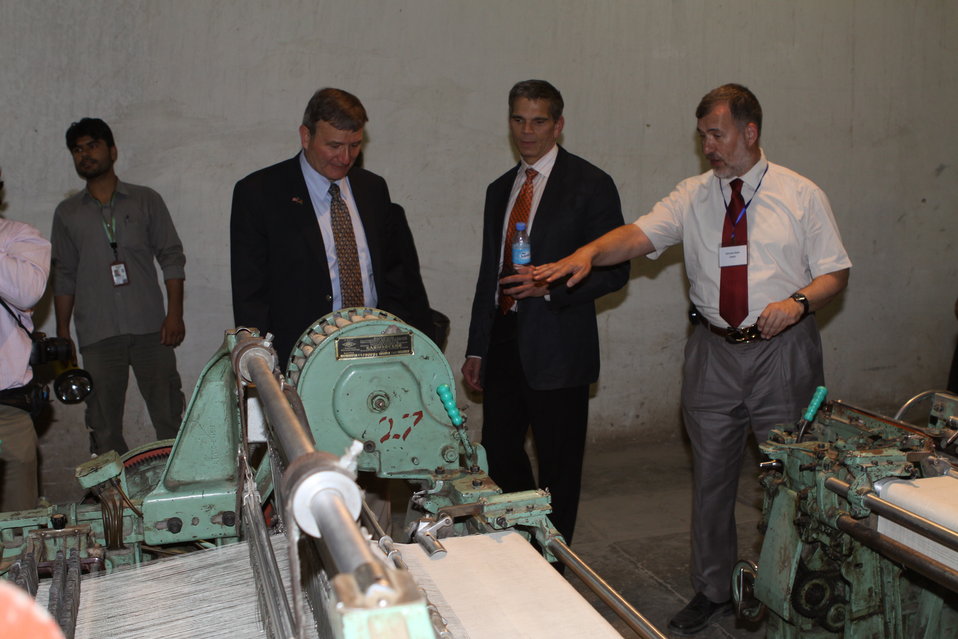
100525 Hirat Textile Company 756